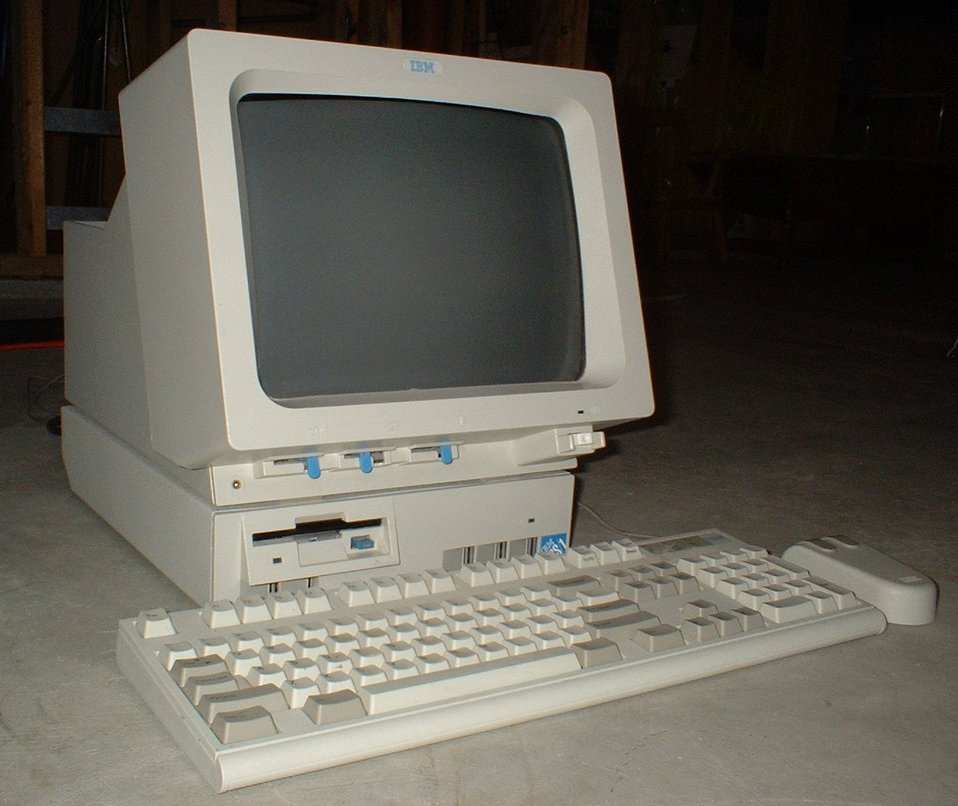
I created this file myself by taking a photograph of my own IBM PS/1